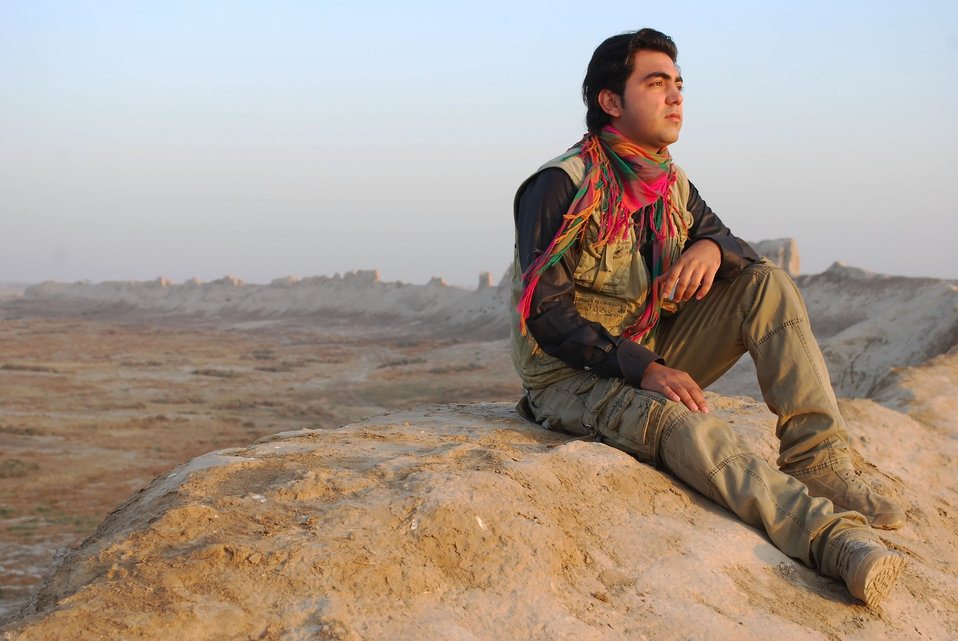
'On the Road' in Balkh Province